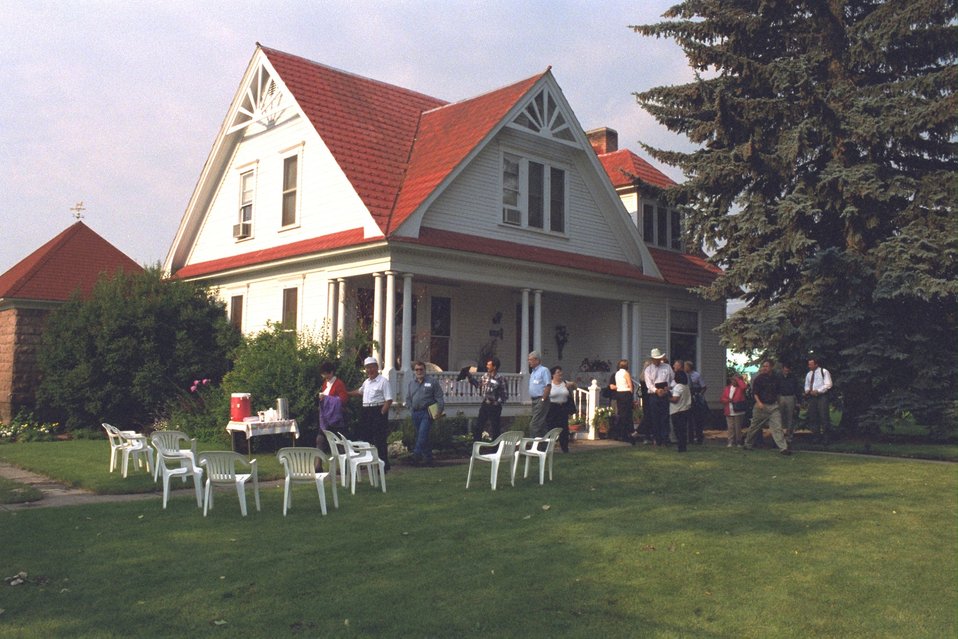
Crowd outside Sage Country Inn, where Secretary Babbitt met with SEAORRAC county court and environmentalists on Steens designation.